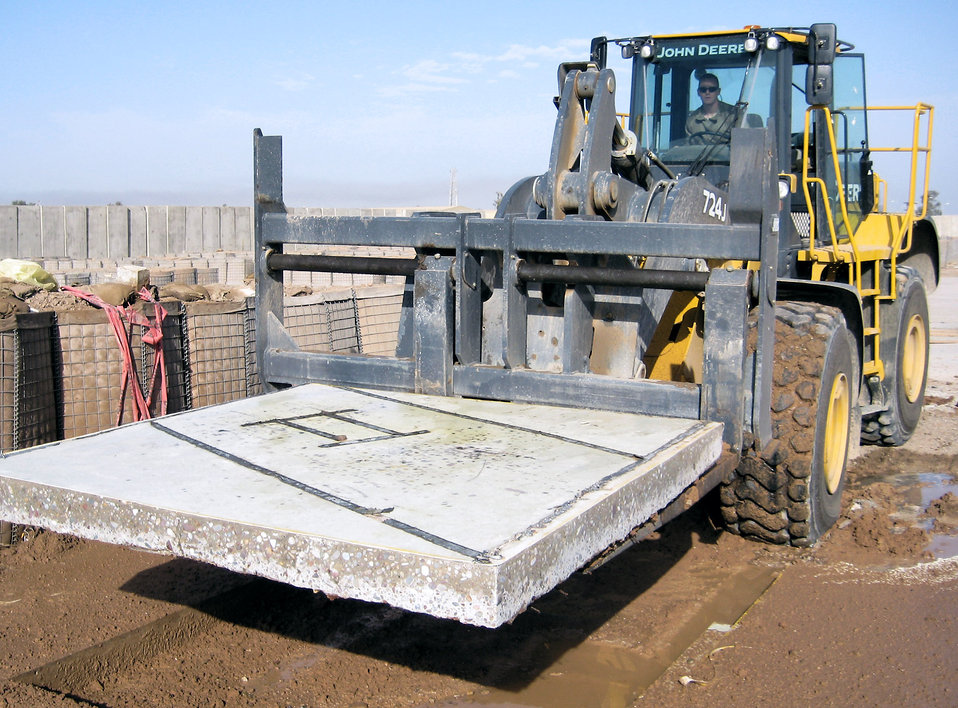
Cementing Balad, Anaconda hospital in history

Tech. Sgt. Troy Parlin lifts a piece of concrete from the original Air Force Theater Hospital floor March 1 at Balad Air Base, Iraq, for transportation to the National Museum of Health and Science in Washington. The floor section, known as Bay II, is slated for exhibition because it is known by the medical community as the place where the most American blood was spilled since the Vietnam War. Sergeant Parlin is a 332nd Expeditionary Civil Engineer Squadron heavy repair operator and technician deployed from McGuire Air Force Base, N.J.